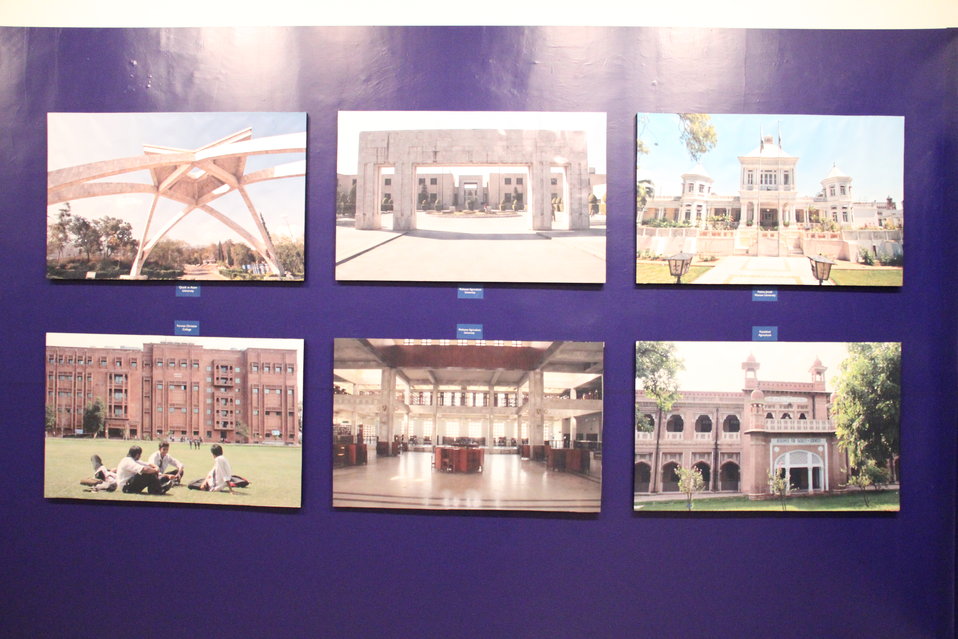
Photo Exhibition Celebrate US-PAK Cooperation at PNCA, Islamabad on April 13, 2012

Photo Exhibition